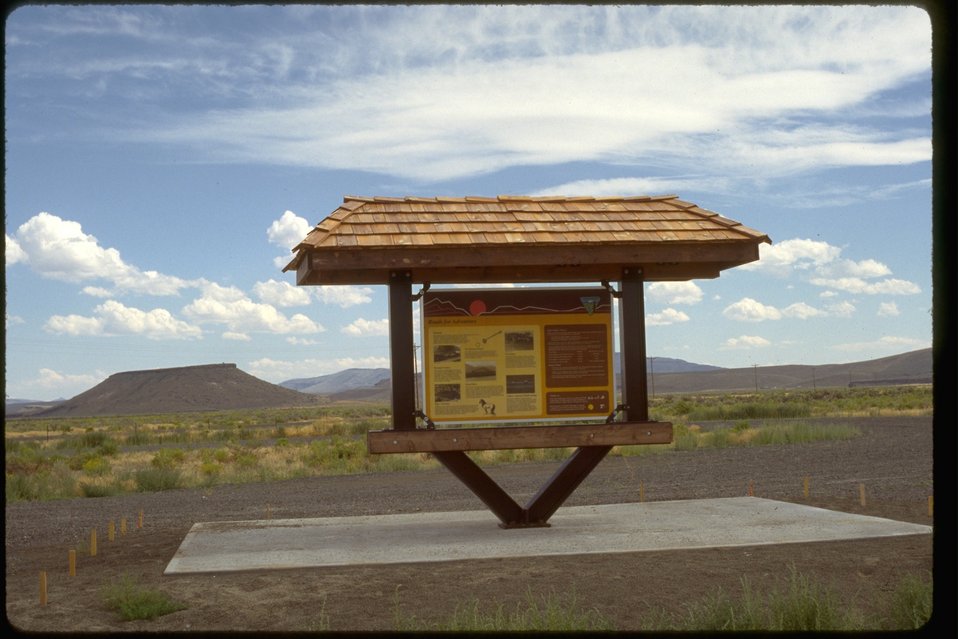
Diamond Loop National Back Country Byway Information Kiosk near Diamond, Oregon.